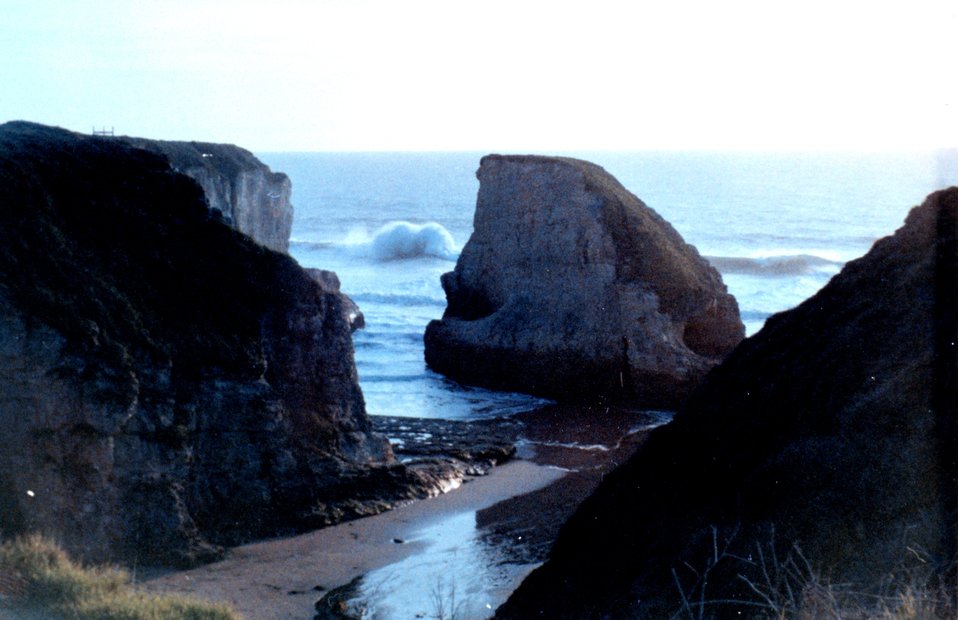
Looking through a slot in the cliffs south of Davenport. Huge surf rebounds off the cliffs and builds even larger interference patterns in the incoming surf.